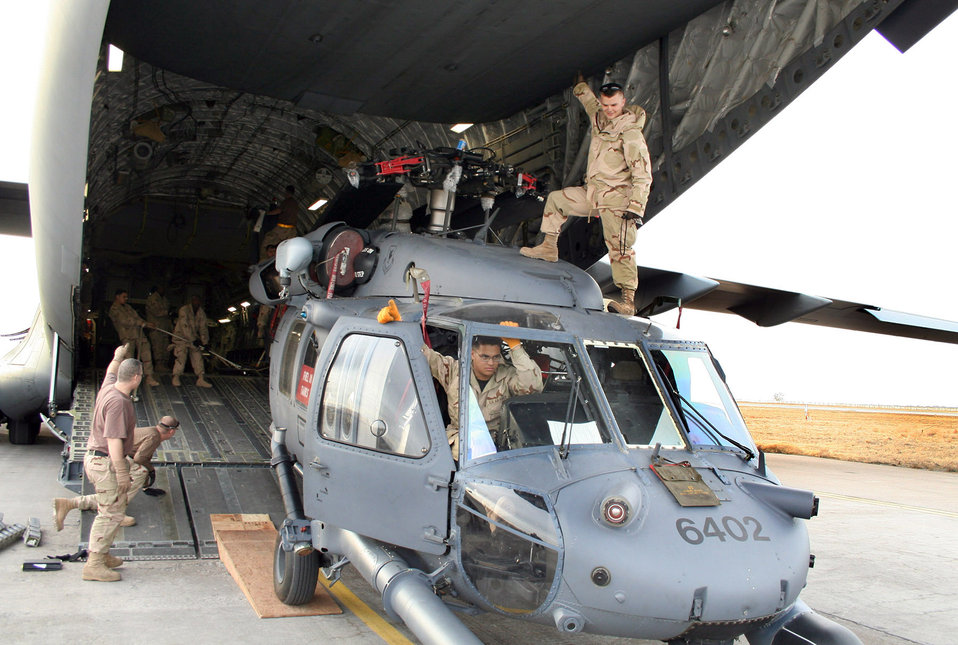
Load it up

MANAS AIR BASE, Kyrgyzstan (AFPN) -- 376th Air Expeditionary Wing aerial porters work with maintainers to load a UH-60L Blackhawk helicopter into a C-17 Globemaster III supporting Operation Enduring Freedom. The maintainers and helicopter are deployed from the 33rd Rescue Squadron, Kadena Air Base, Japan.